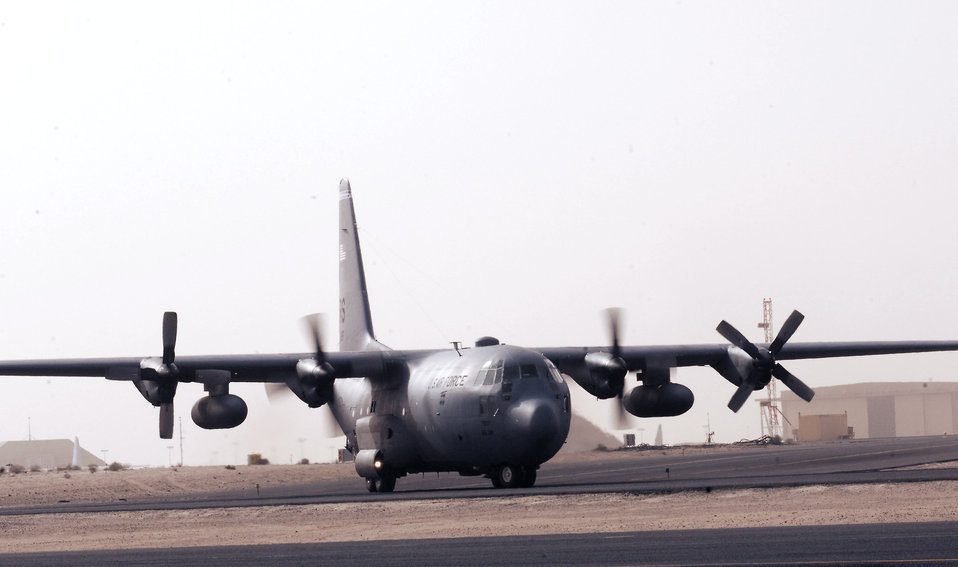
Feb. 22 airpower summary: C-130s provide backbone for operations

A C-130 Hercules taxis unto the tarmac at an air base in the Southwest Asia. The aircraft is carrying personnel leaving from Operation Iraqi Freedom.